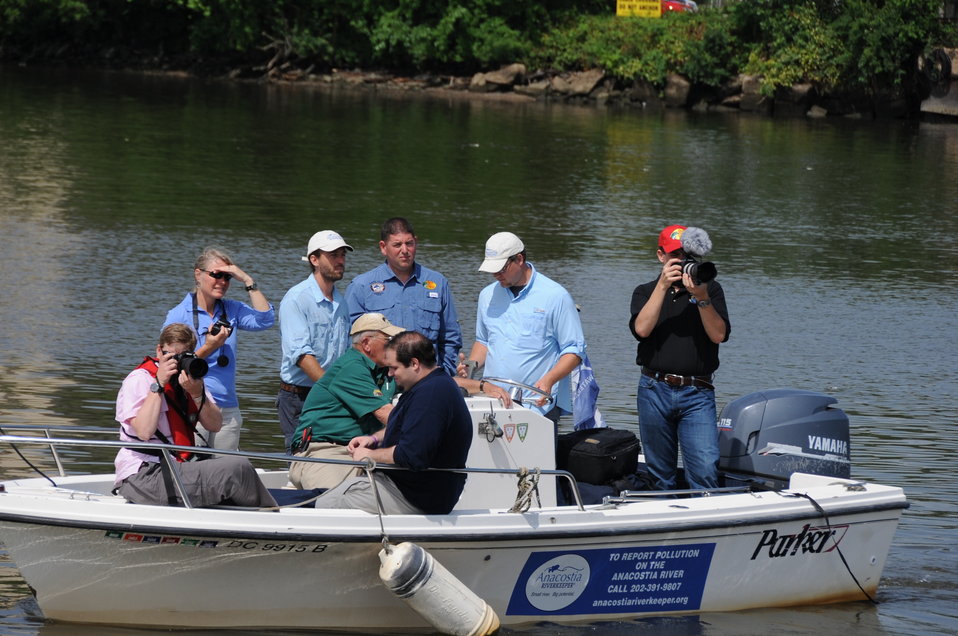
2013 National Fishing and Boating Week

Media Boat